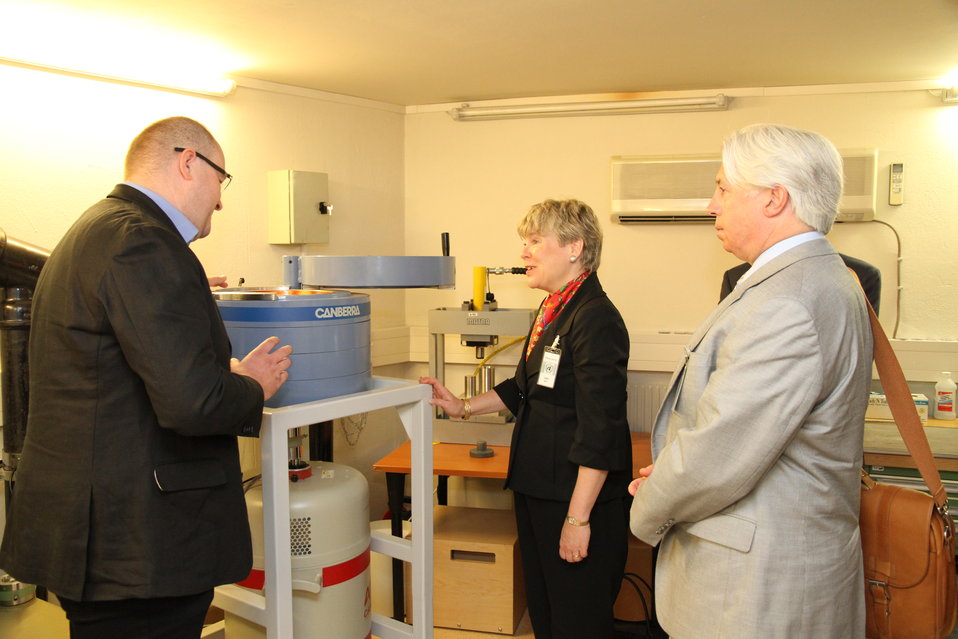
Secretary Gottemoeller Visits Comprehensive Nuclear Test Ban Treaty Organization in Vienna

Assistant Secretary for Arms Control, Verification and Compliance Rose Gottemoeller receives a tour of the Comprehensive Nuclear Test Ban Treaty Organization in Vienna, Austria, on June 14, 2011.